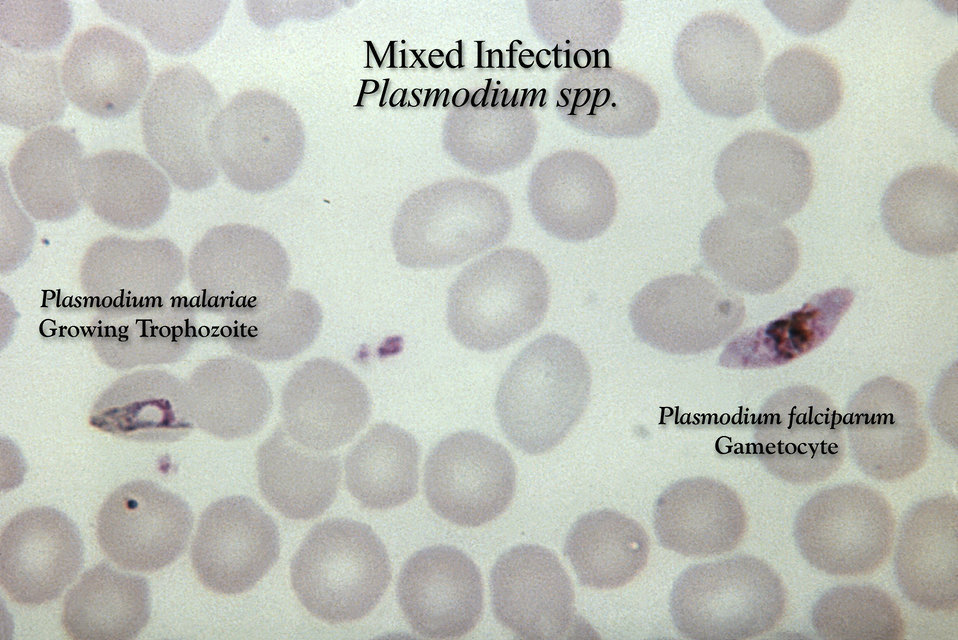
This thick film Giemsa stained micrograph reveals a mixed P. falciparum and P. malariae parasitic infection.